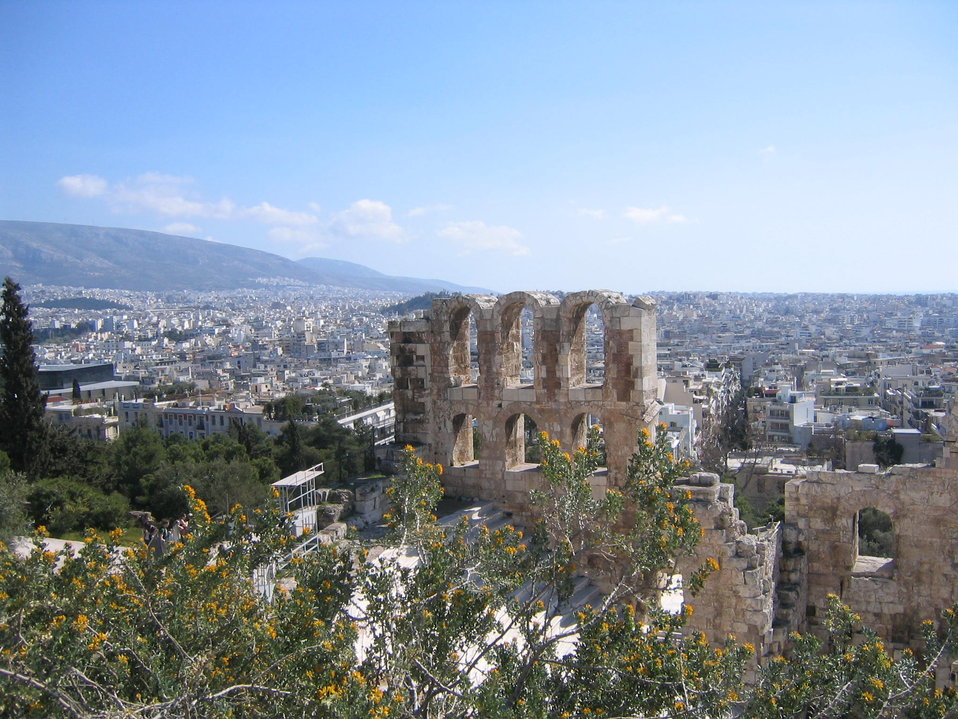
Uploaded by request of Mary J. Leou

Taken in Athens Greece, March 16, 2008

Springtime in Athens - taken as part of an NYU Travel Colloquium entitled 'Humans and Nature' --- On this journey students learned about global environmental issues, local flora and fauna, habitat protection, and environmental stewardship.